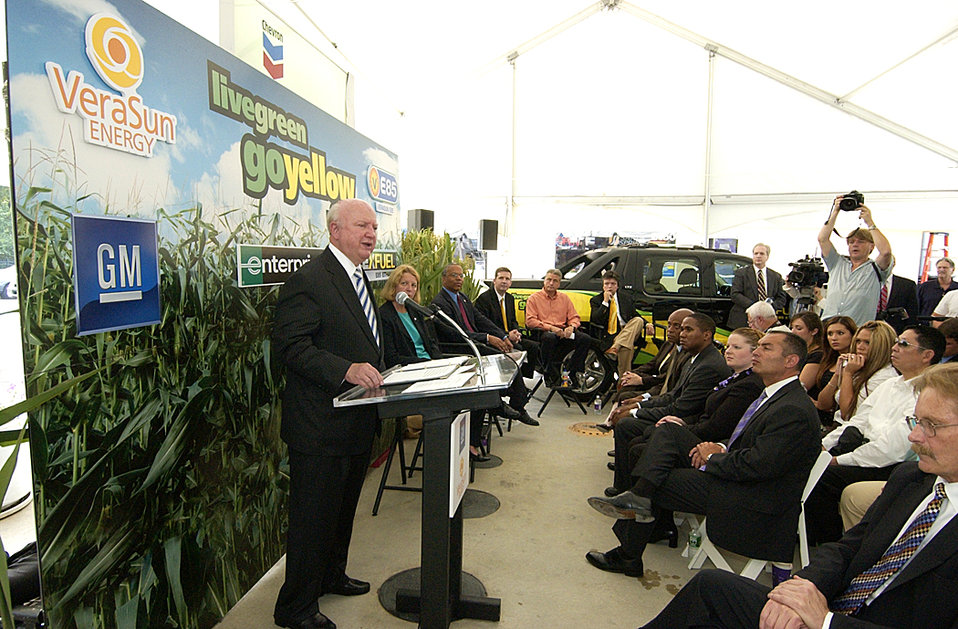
Energy Secretary Samuel Bodman speaks at the grand opening of the first publicly available E-85 fueling station at the Georgetown Chevron Station in Washington, DC on August 28, 2007.